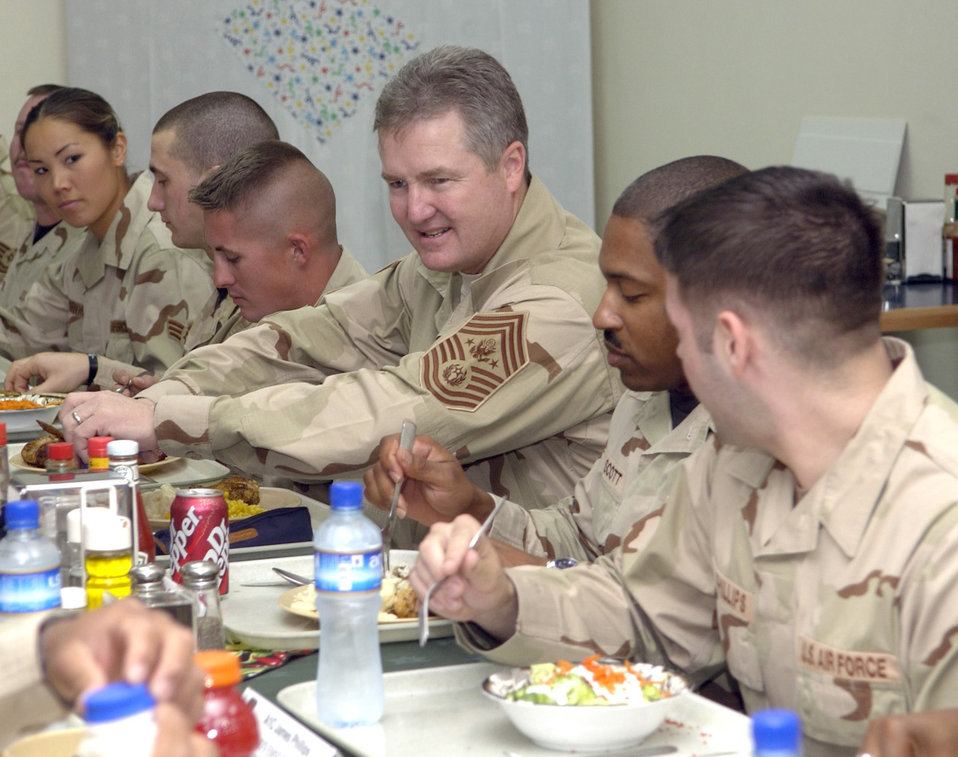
Top chief visits troops

SOUTHWEST ASIA (AFPN) -- Chief Master Sgt. of the Air Force Gerald R. Murray eats lunch with Airmen assigned to the 379th Air Expeditionary Wing, Jan. 3. He wanted to get their thoughts on the Air Force's future, its new uniforms and the